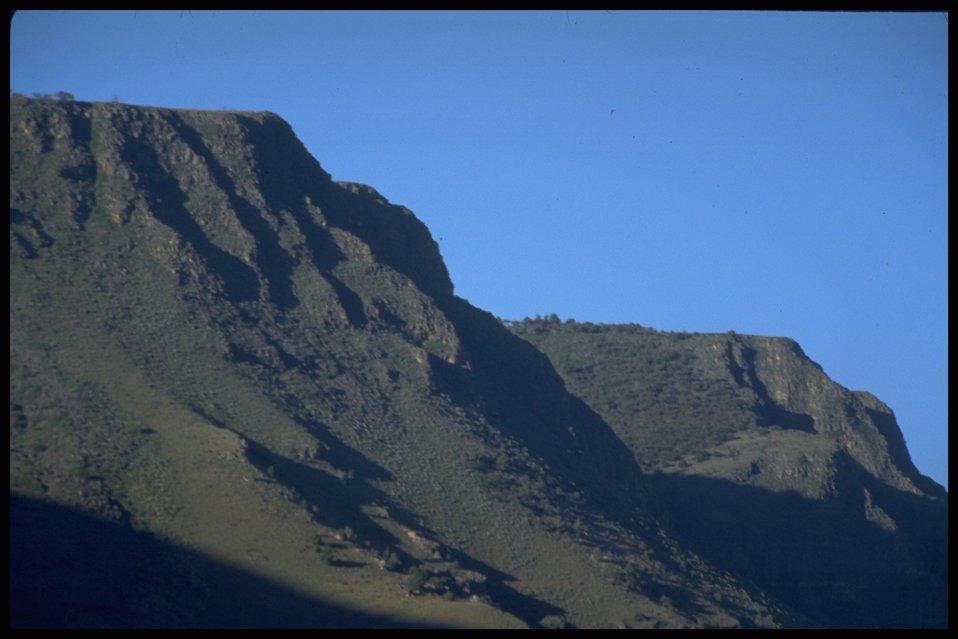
Abert Rim, Lakeview District.